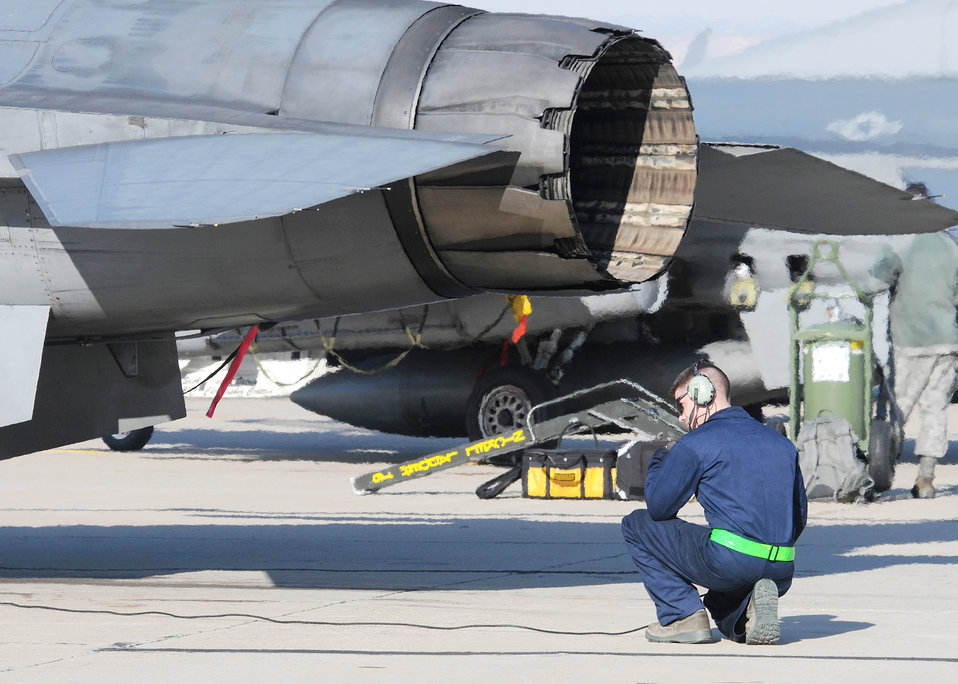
Airmen train in Spain

Staff Sgt. David Fells performs pre-flight checks during start up procedures Feb. 2, 2010, at Zaragoza Air Base, Spain. Crew chiefs from the 555th Fighter Squadron from Aviano Air Base, Italy, maintained 16 aircraft during this training deployment. Sergeant Fells is an 555th Aircraft Maintenance Unit crew chief.